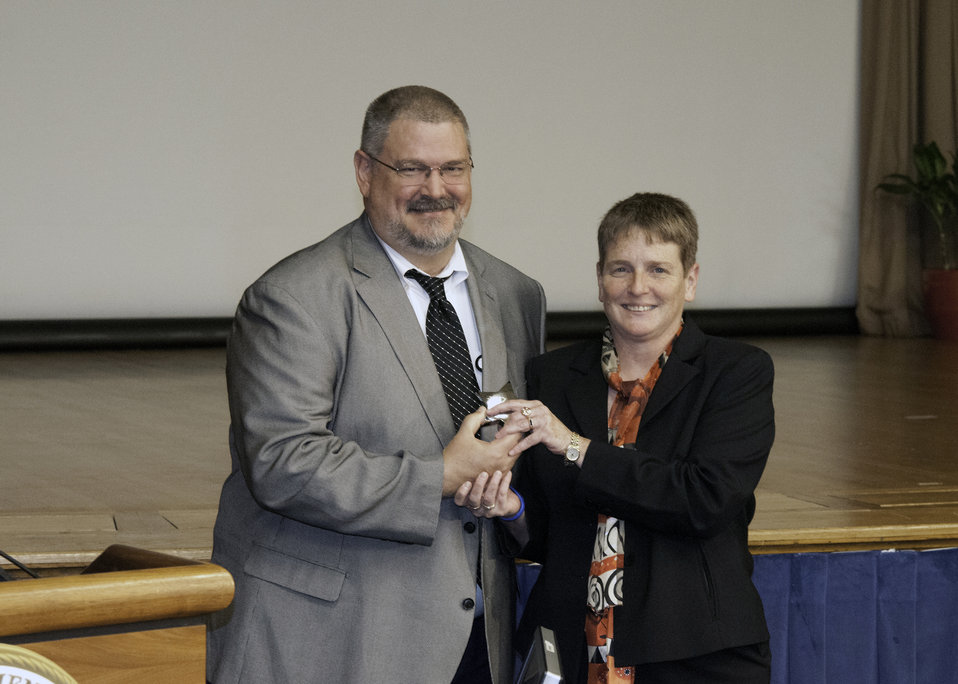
President of the U.S. Department of Agriculture (USDA) Federal Gay, Lesbian, and Bisexual Employees (FEDGLOBE) Blake Velde presents the FedGLOBE Award to Agriculture Deputy Assistant Secretary for Administration (ASA) Robin Heard USDA’s annual Lesbian Gay Bisexual Transgender (LGBT) Pride Observance in the Jefferson Auditorium in Washington, D.C. on June 7, 2012. Deputy ASA Heard was recognized for her ongoing commitment to diversity and inclusion for all USDA employees.